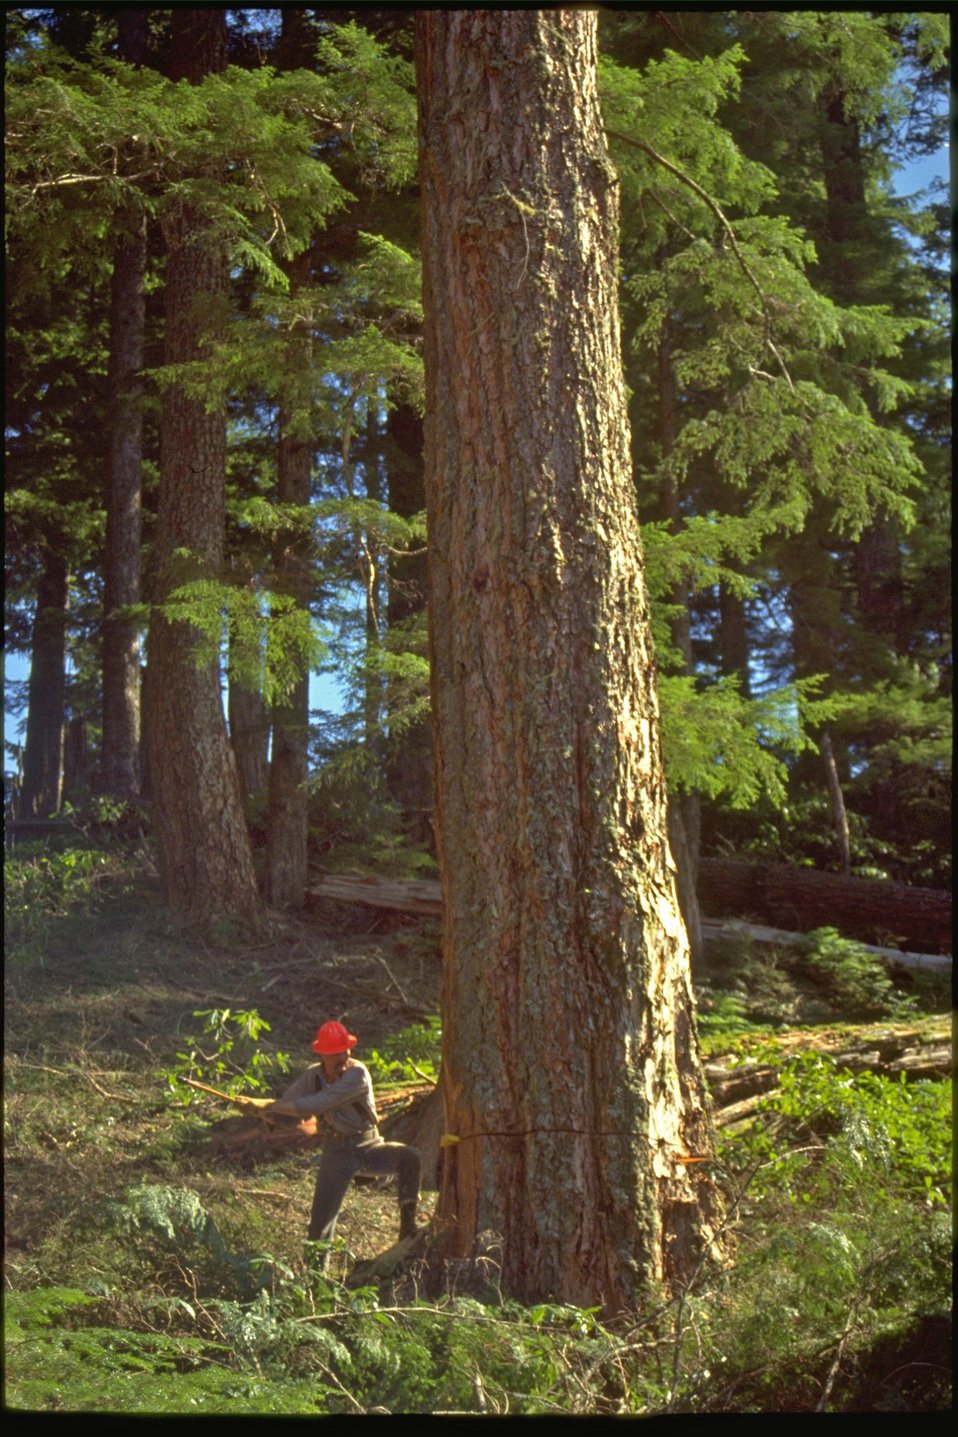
Logger in the process of falling a tree.